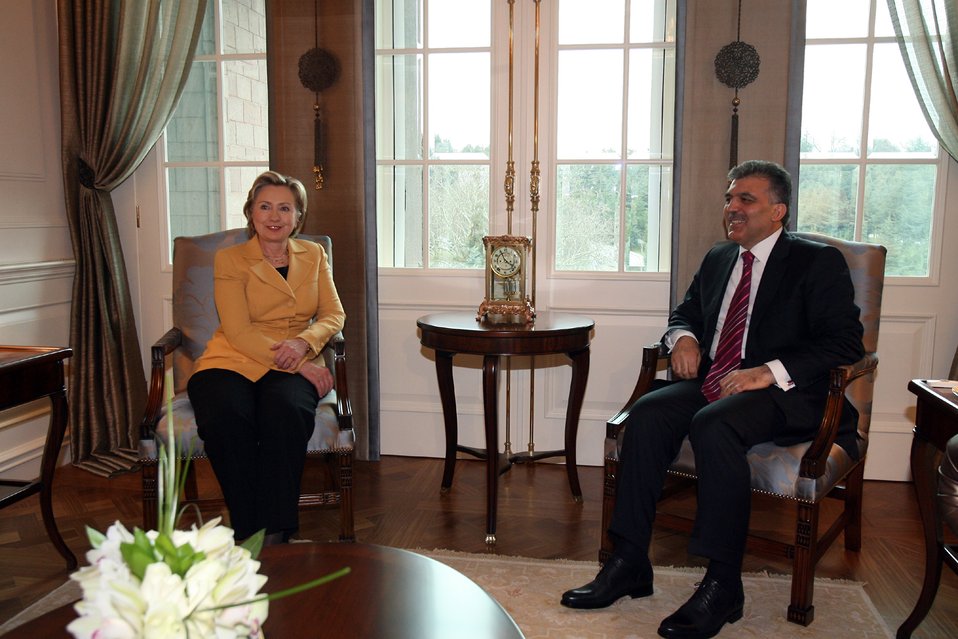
Secretary Clinton With Turkish President

U.S. Secretary of State Hillary Rodham Clinton and Turkish President Abdullah Gul, Presidential Palace, Ankara, Turkey March 7, 2009.